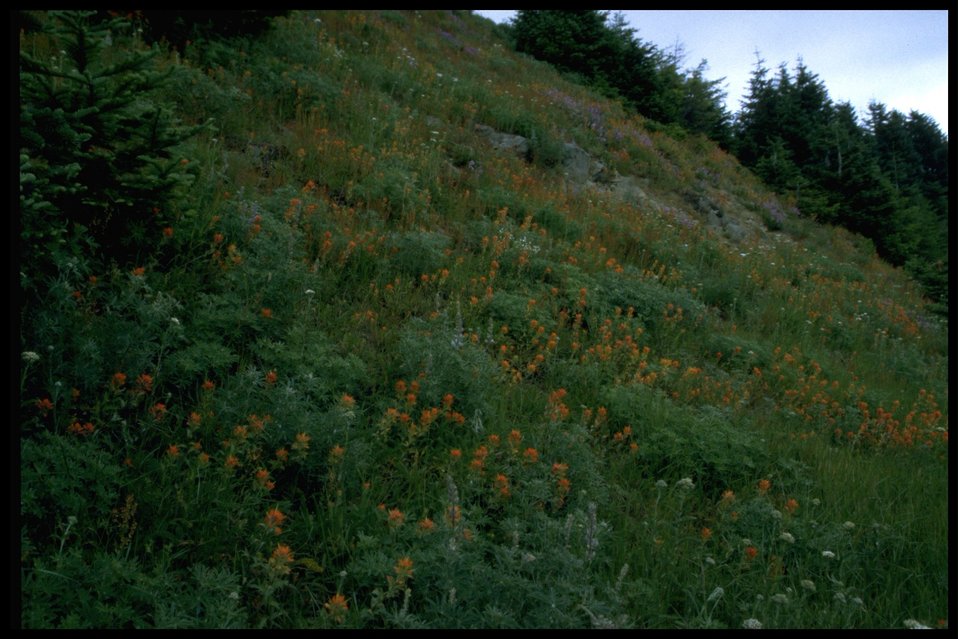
Farshot of Rock Garden Castilleja.